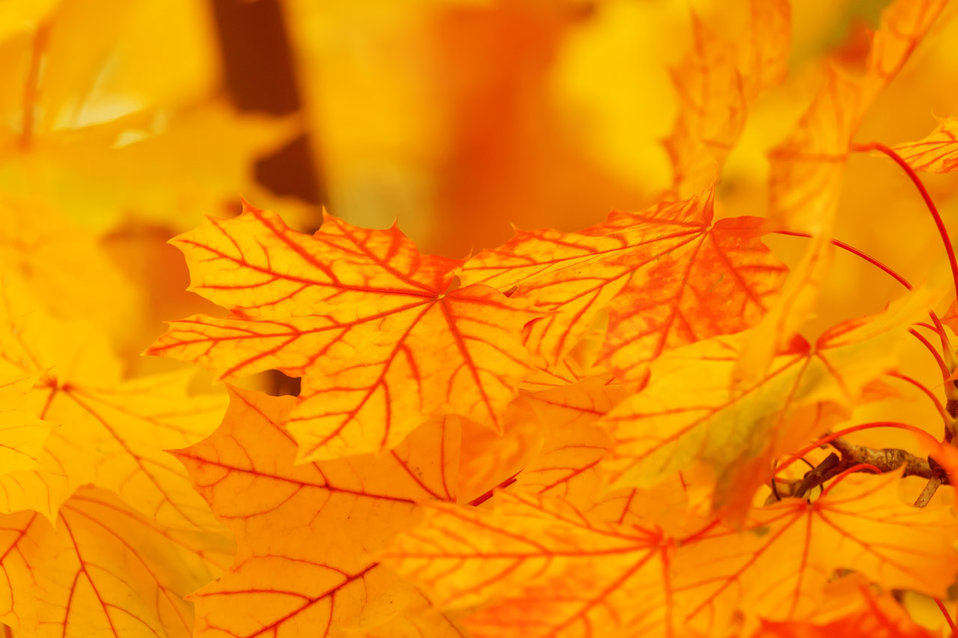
Bright yellow leaves

Bright yellow autumn leaves.